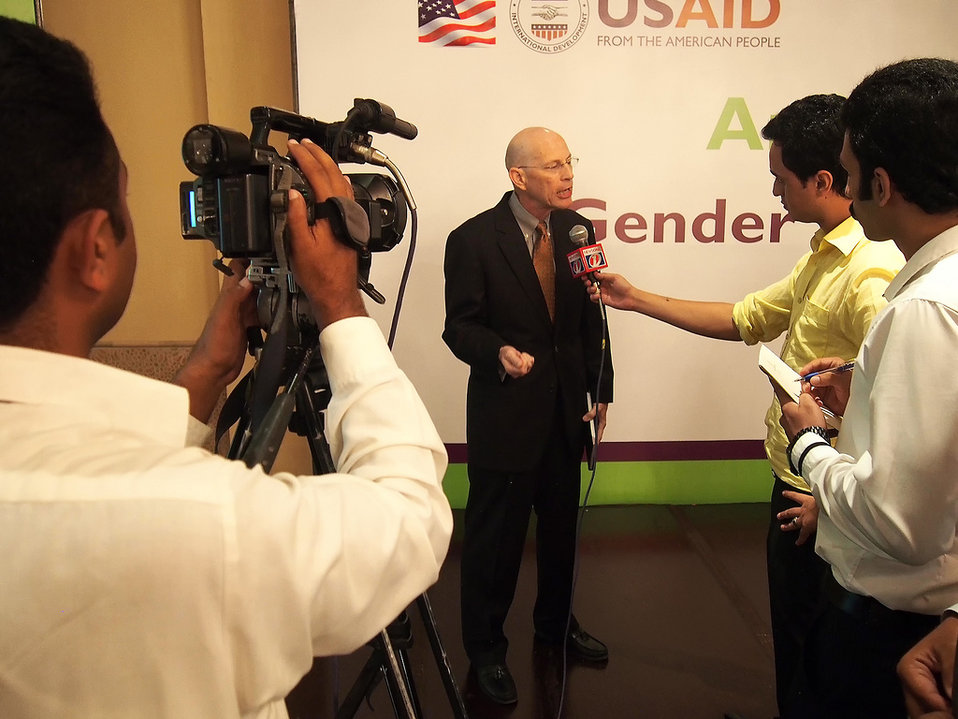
Gender Equity Program, Pakistan

USAID and Aurat Foundation annual event in Islamabad, Sept. 20, 2013